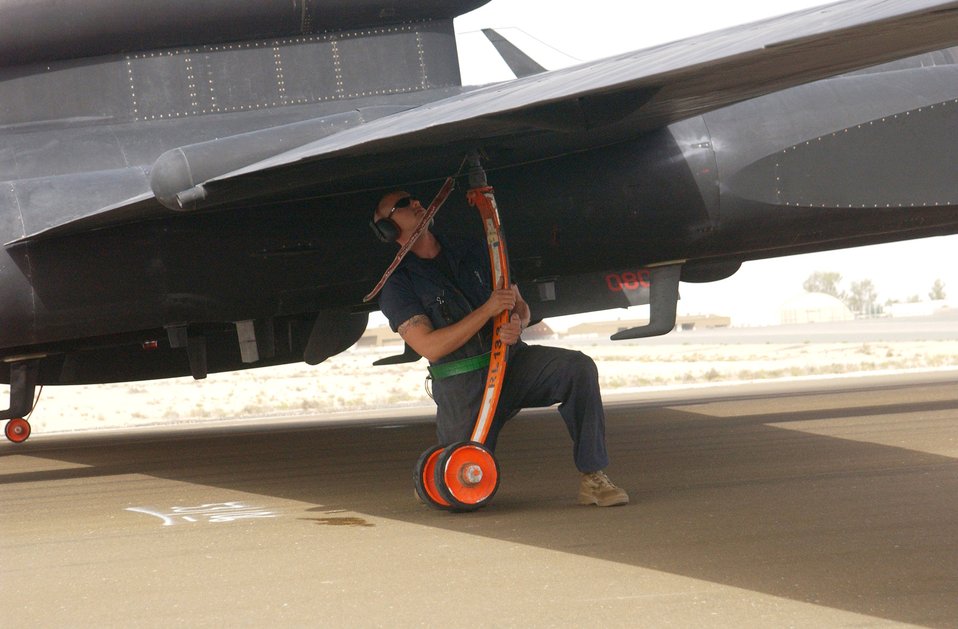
U-2 maintainers boast streaking hot record

Senior Airman Jordan Mihm installs a pogo wheel onto the wing of a U-2